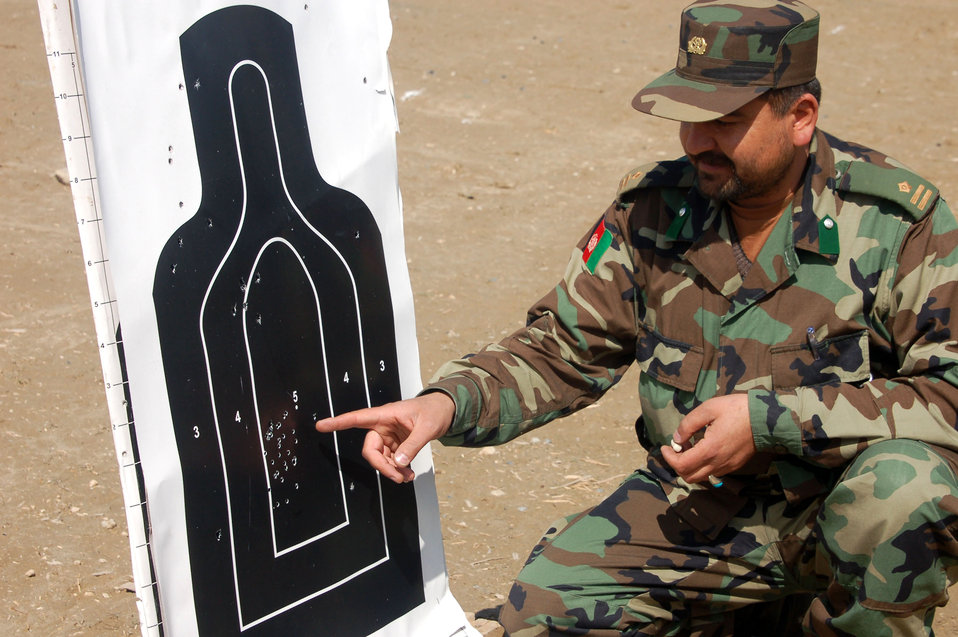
At home on the range

Afghan National Army Capt. Abdul Rahman inspects his target March 14 after firing an M-16 at a shooting range at the Kabul Military Training Center. Captain Rahman, the 1st Company military police commander, has been in the ANA since its inception in 2002.